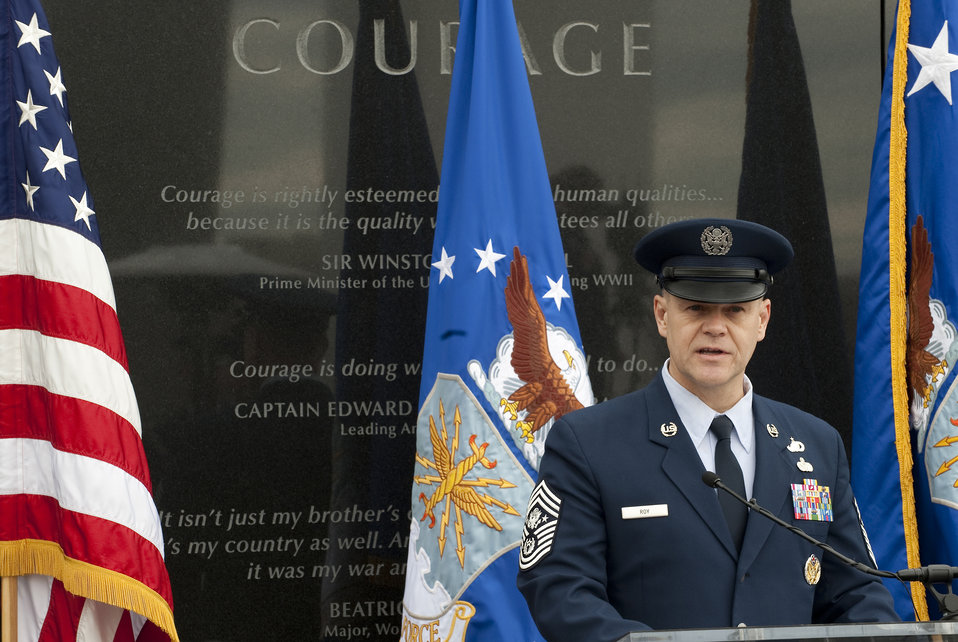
CMSgt Etchberger unveiling ceremony

Chief Master Sgt. of the Air Force James Roy provides remarks during a ceremony March 11, 2011, to unveil Medal of Honor recipient Chief Master Sgt. Richard L. Etchberger's name which was added to the Air Force Memorial in Arlington, Va.